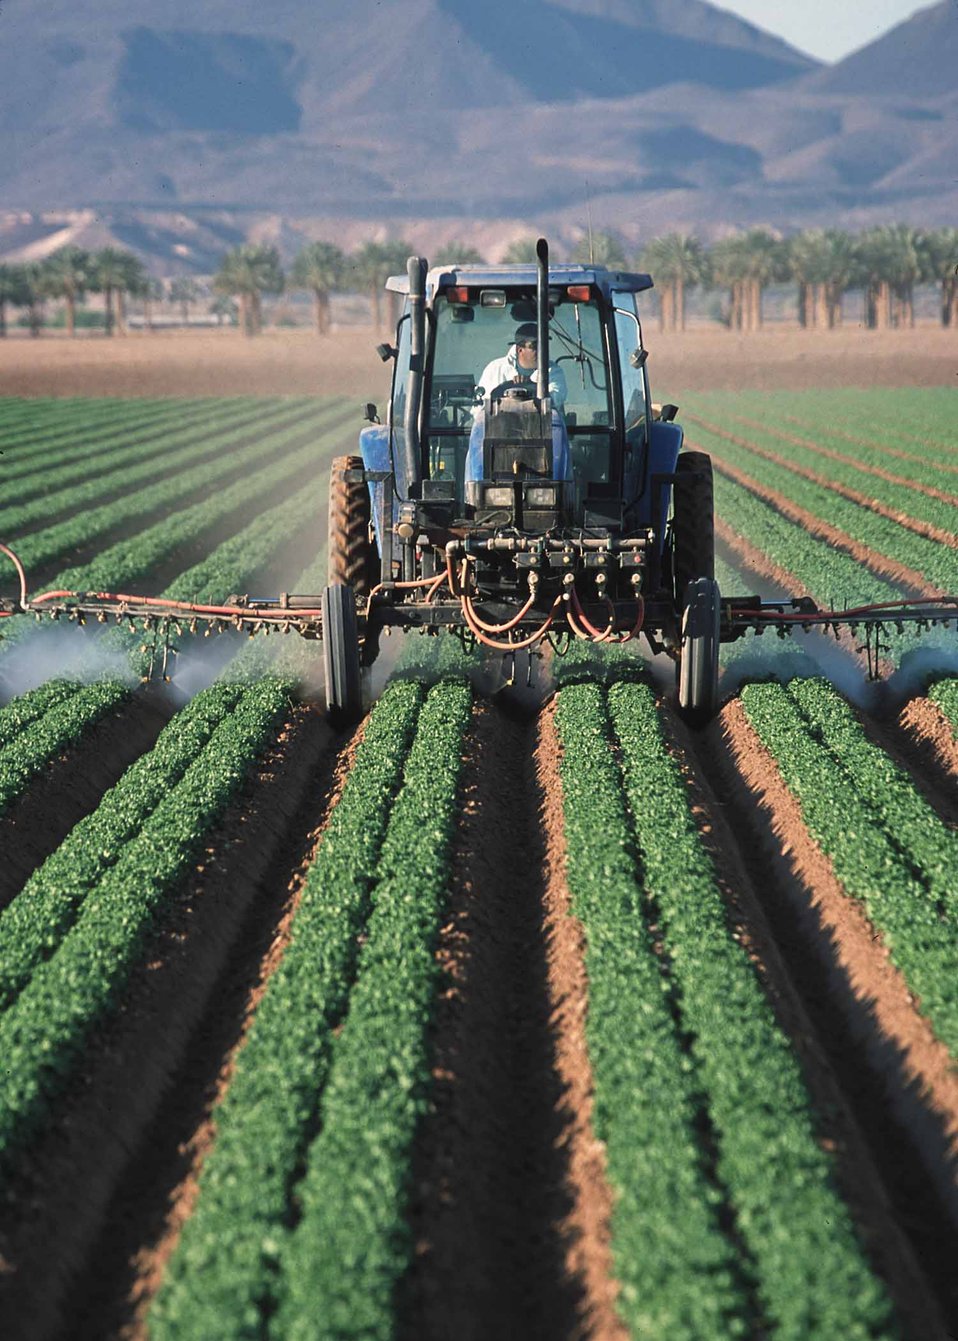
Pesticide application on leaf lettuce in Yuma, Az.